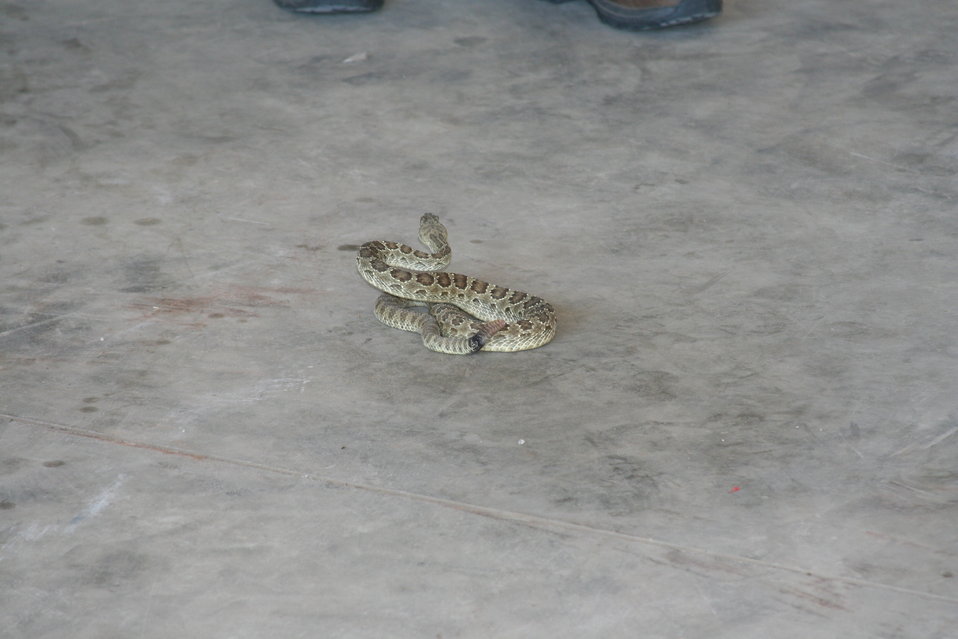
2011 Huron Prairie Fest